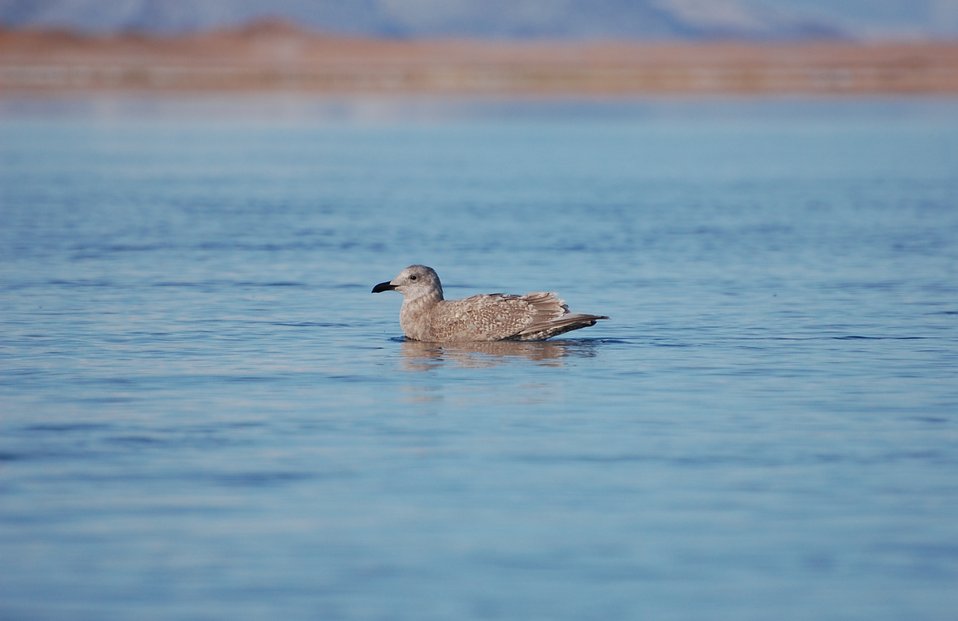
Juvenile Glaucous-winged Gull

Izembek National Wildlife Refuge